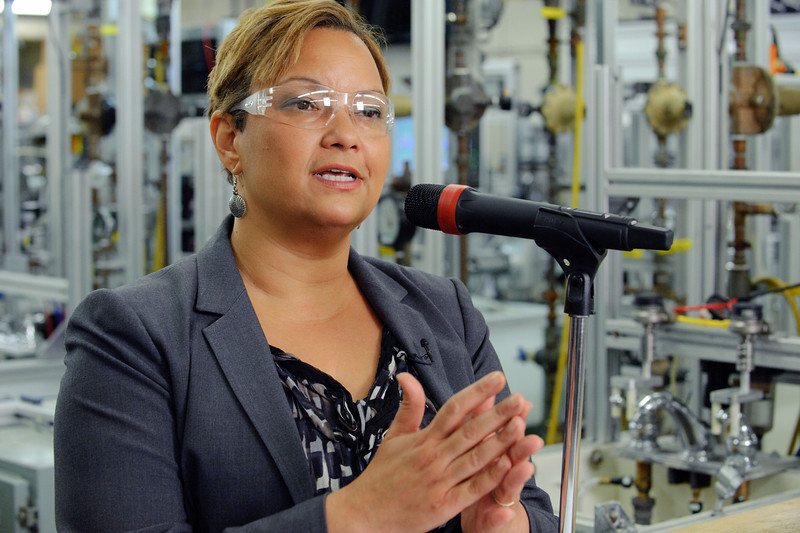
2011-06-17ClevelandBanner002-L

USEPA Administrator Lisa P. Jackson speaks at the WaterSense conference in Cleveland,OH